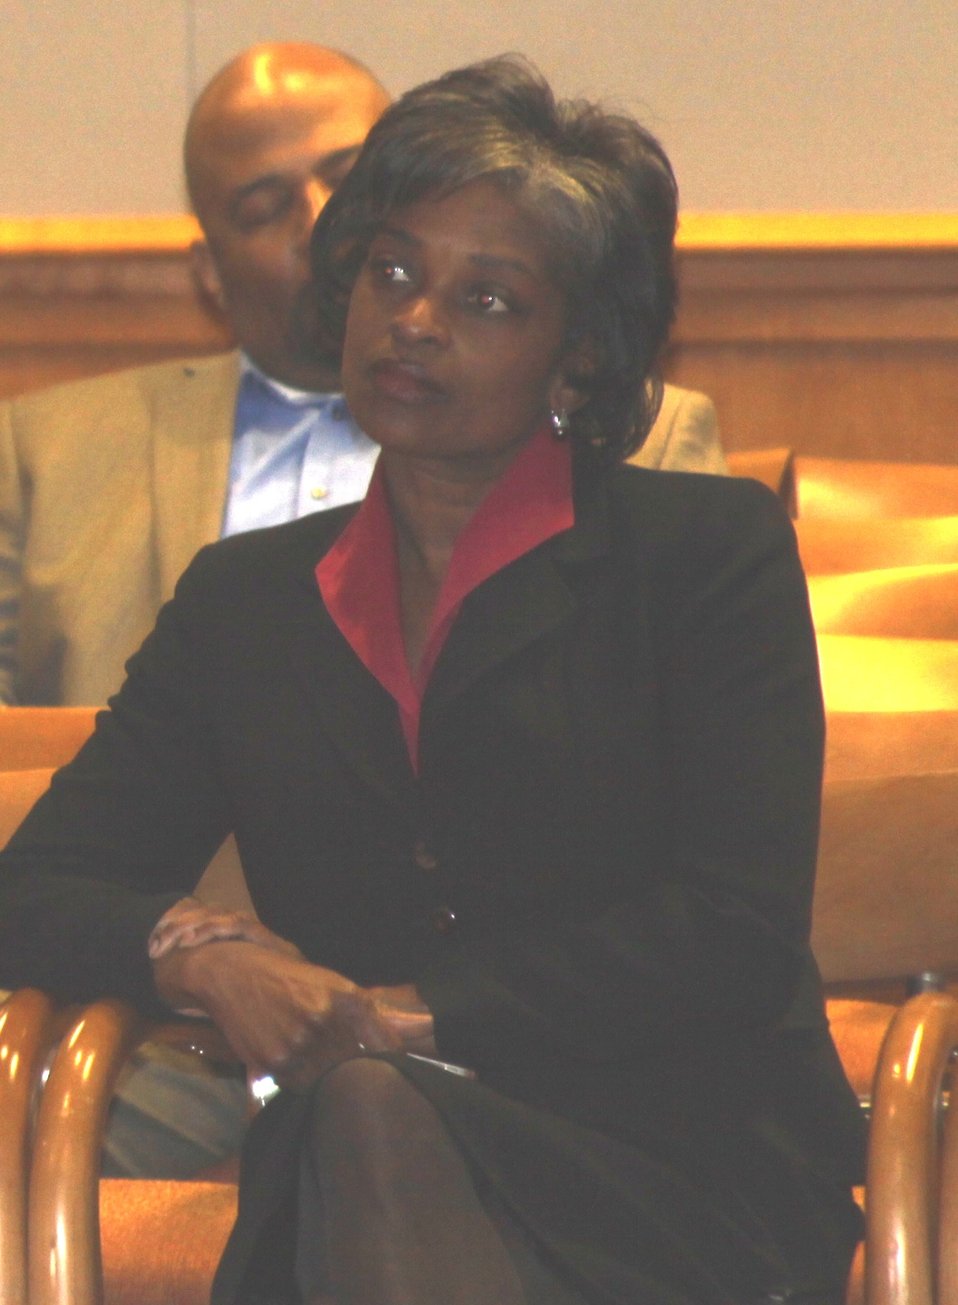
Commissioner Mignon Clyburn at the March 27, 2013 Gigabit City Challenge: Broadband Networks Workshop